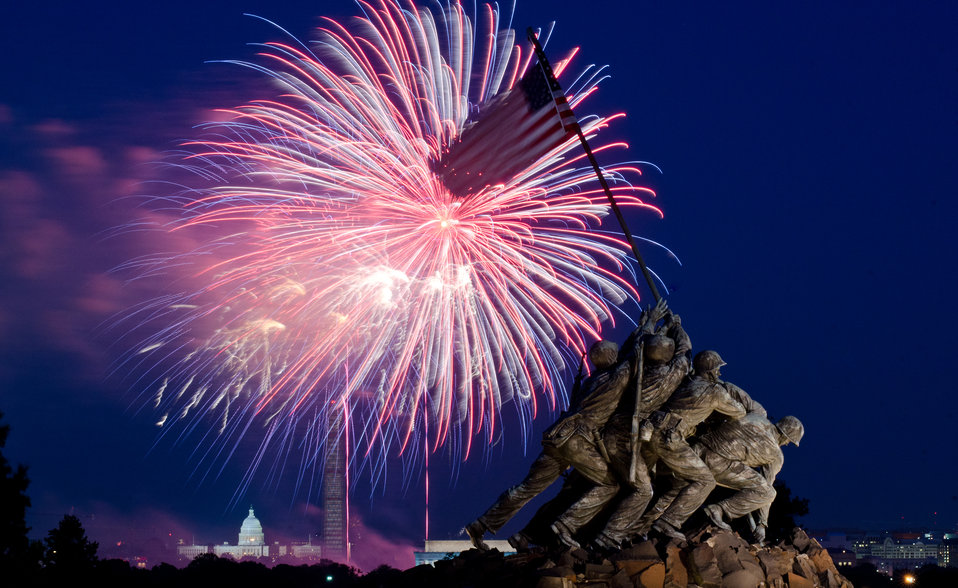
Independence Day celebration fireworks are seen from the Iwo Jima, U.S. Marine Corps Memorial in Arlington, VA on Jul. 4, 2013. In the distance are the Lincoln Memorial, the U.S. Department of Agriculture (USDA) Yates Building (dark red brick building), the Washington Monument (with scaffolding), and the U.S. Capitol building in Washington, D.C.